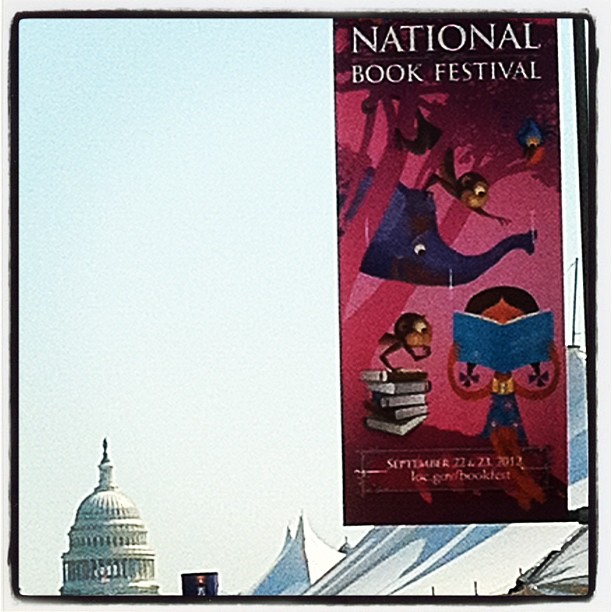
Visit the LOC #natbookfest today and Sunday on Mall.